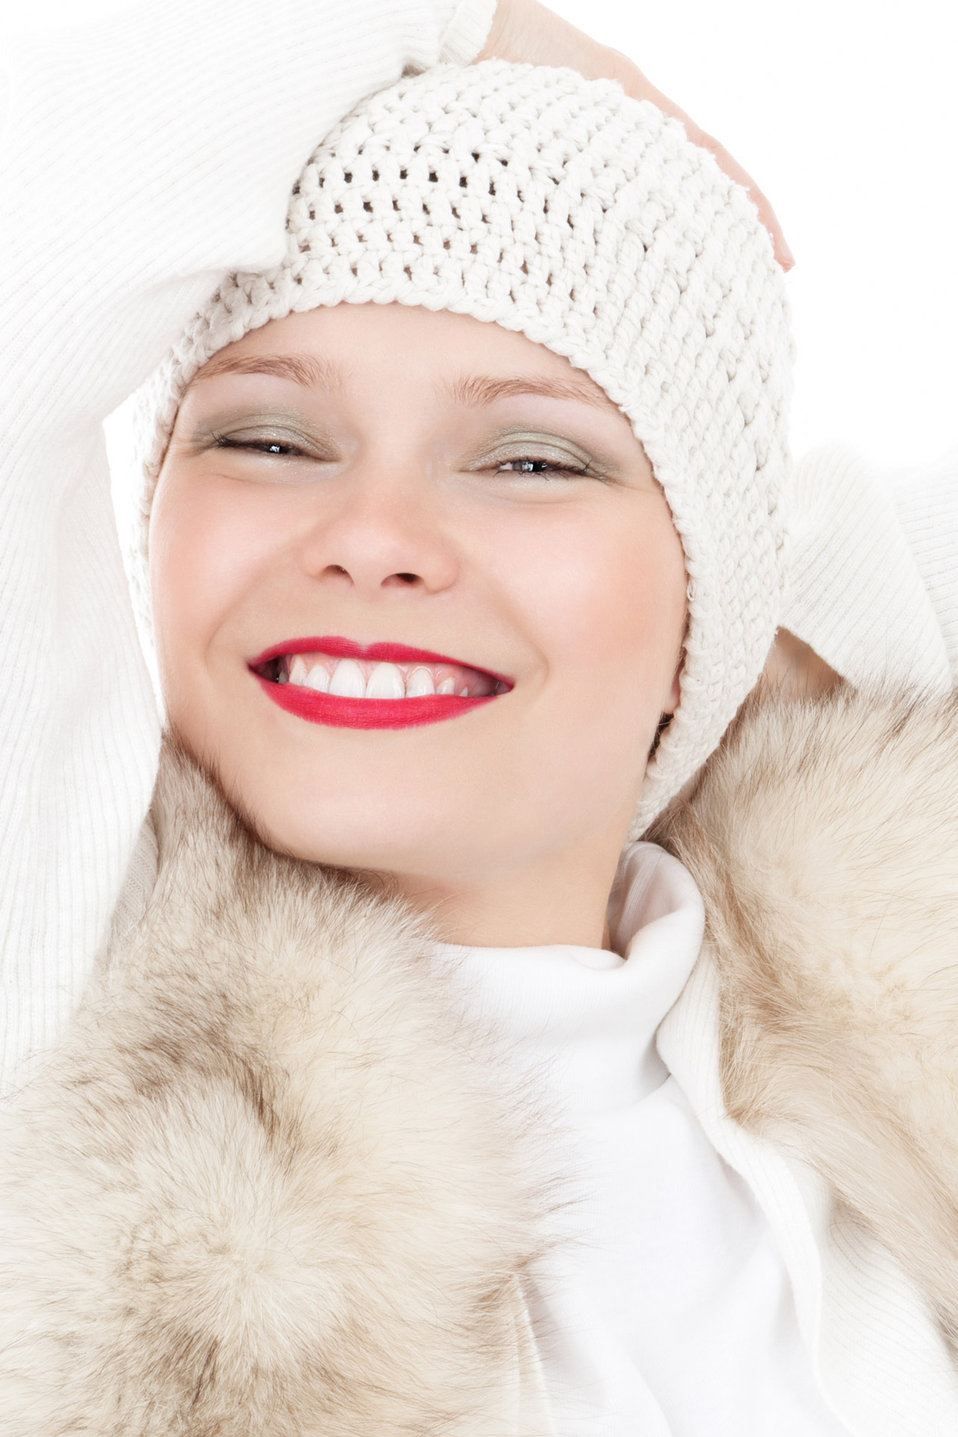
Winter girl portrait

Smiling woman in winter clothes.